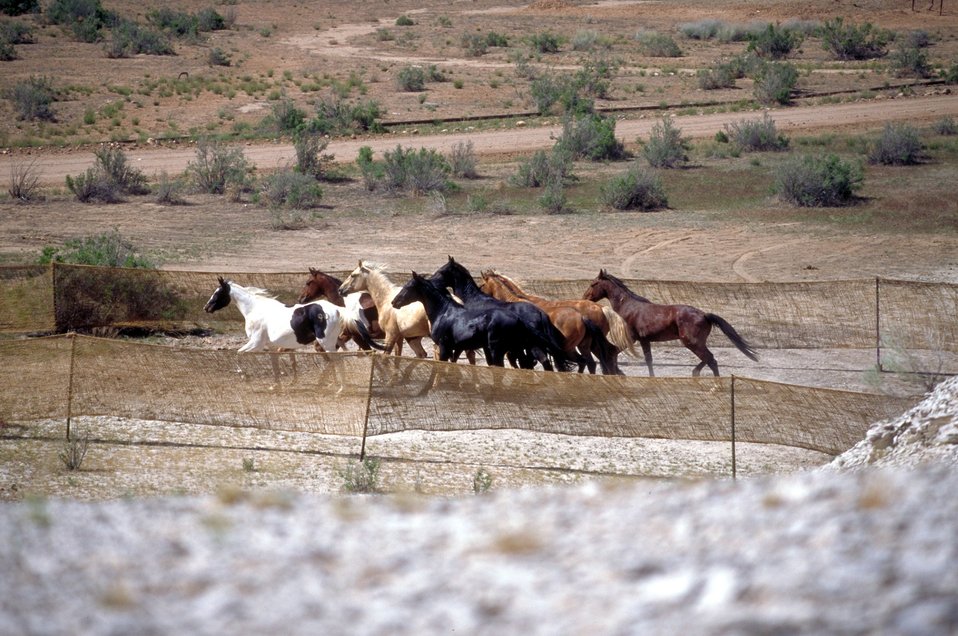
Wild horse gather near Vernal, Utah.